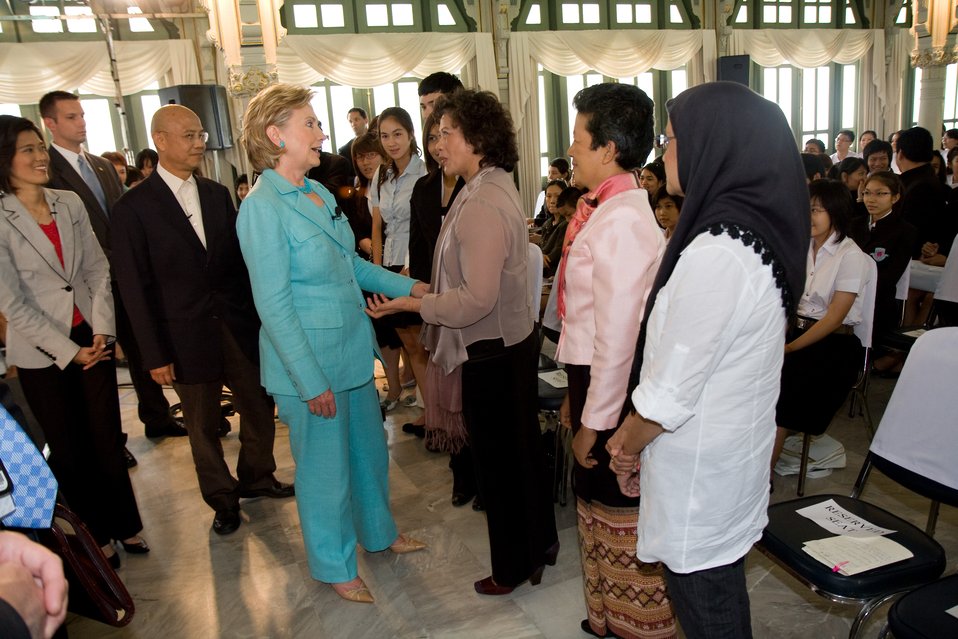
Secretary Clinton Interviews With the Nation Group

U.S. Secretary of State Hillary Rodham Clinton Secretary Clinton is greeted by Dr. Noeleen Heyzer, Undersecretary General of the United Nations and Executive Secretary of the Economic and Social Commission for Asia and the Pacific after her interview at Phyathai Palace in Bangkok, Thailand July 22, 2009.